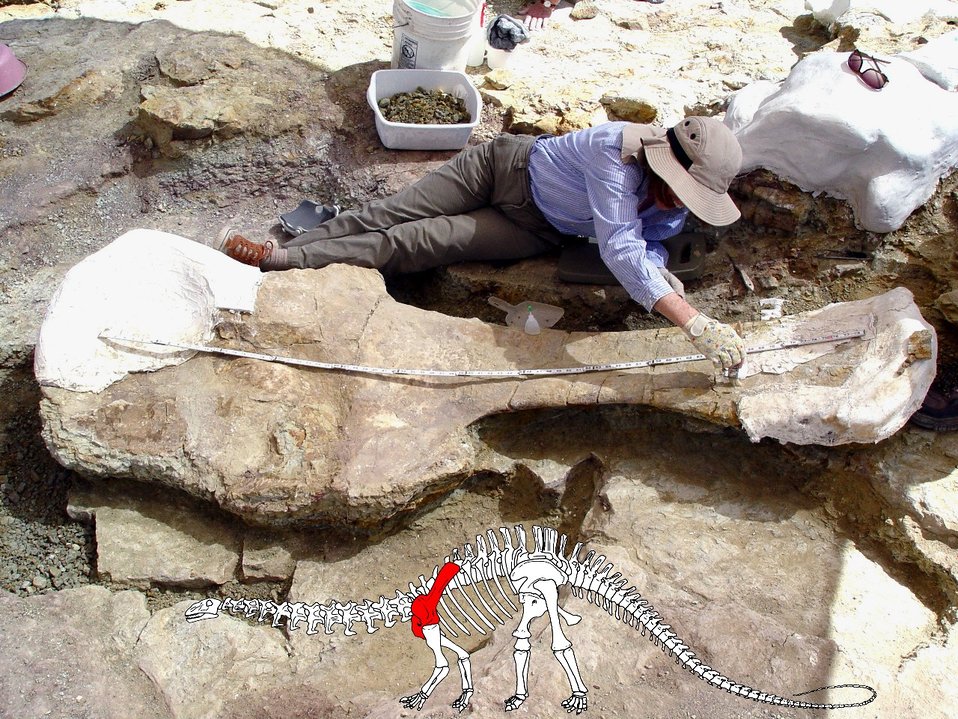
dinosaur mayse shoulder blade

Passport in Time volunteer Frances Mayse measures a nearly eight-foot-long shoulder blade of an Apatosaurus near the Last Chance quarry in May 2008. The graphic inset shows the location of the bone on the Apatosaurus.